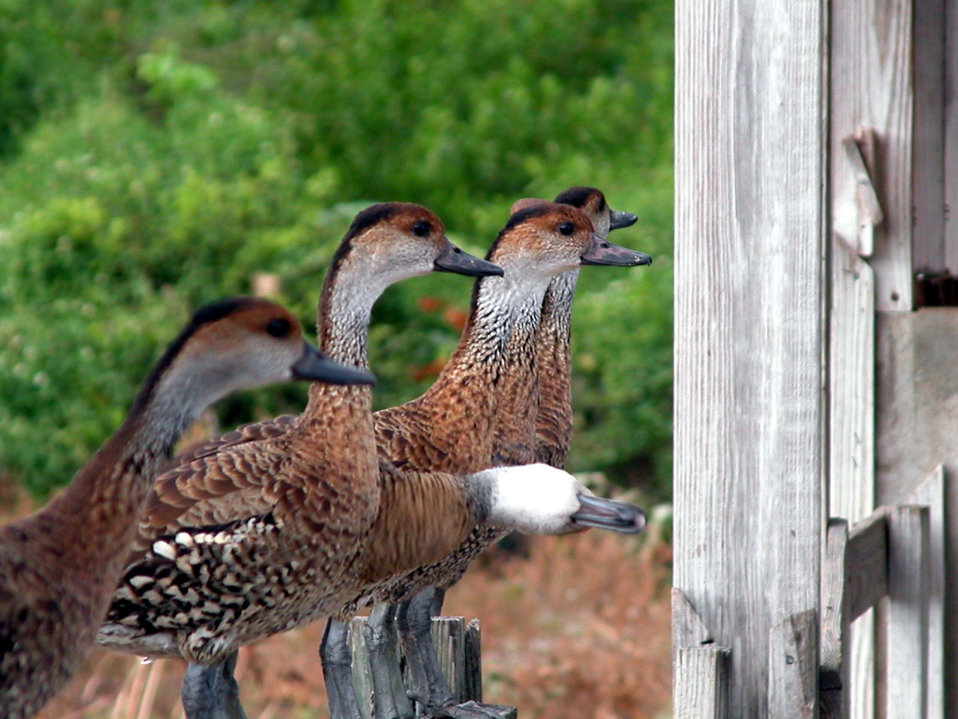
WIWDs in Grand Cayman - 2

West Indian whistling ducks on Grand Cayman island, Bahamas.